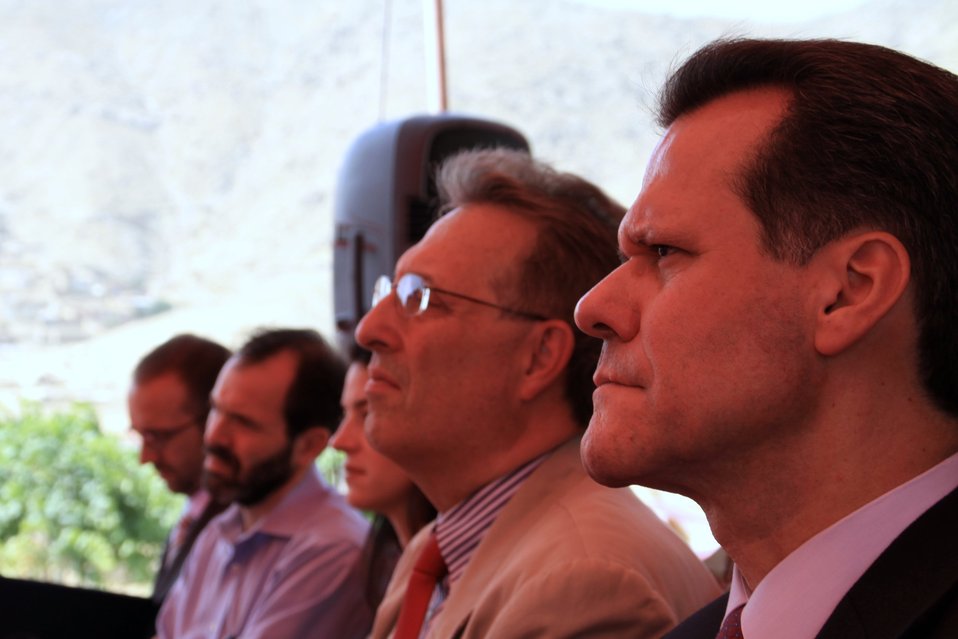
Badam Bagh Farm